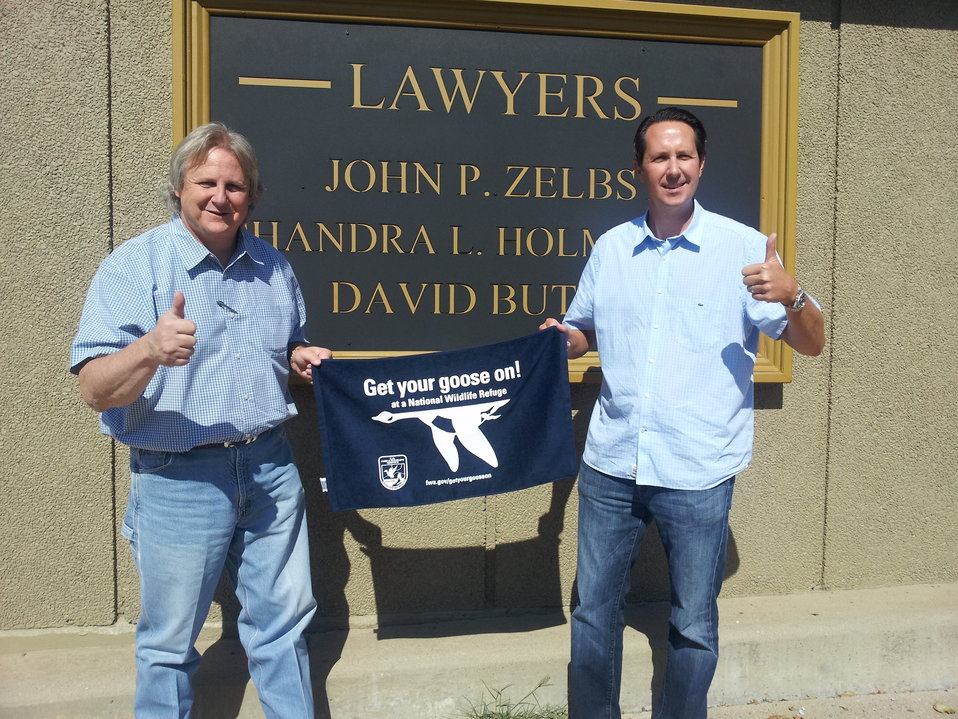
Get Your Goose On!

Wichita Mountains National Wildlife Refuge in Oklahoma.